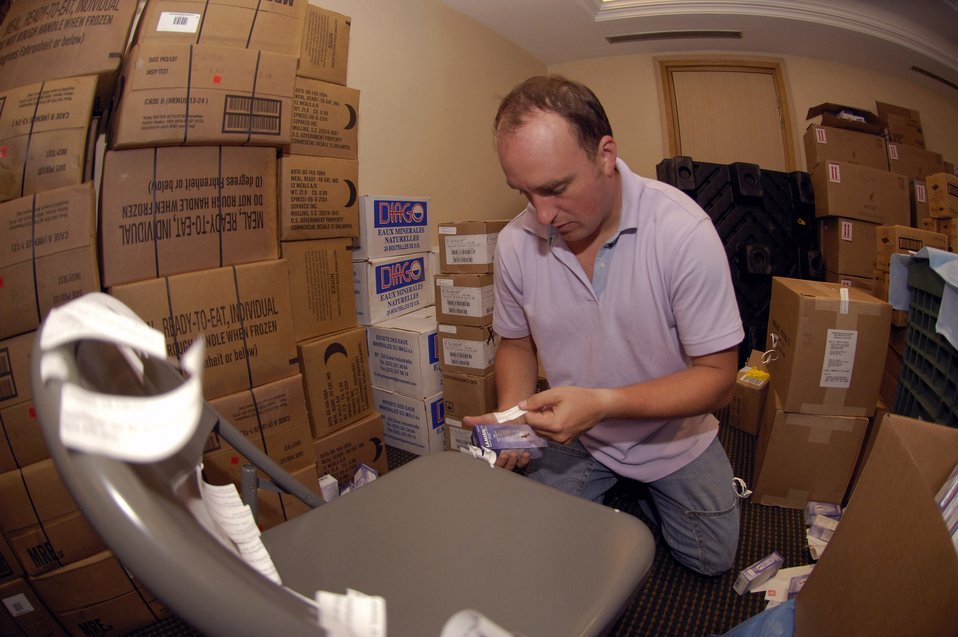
Pharmacist dispenses much-needed medicine for Malians

Maj. Altan Shaffer labels one of more than 40 medicines that will be distributed to thousands of Malians during MEDFLAG 08, July 14. More than 90 servicemembers deployed to Bamako, Mali, for MEDFLAG 08, a multinational medical training exercise designed to enhance medical capabilities and readiness for U.S. and African Forces. Major Shaffer is deployed from the 31st Medical Group, Aviano Air Base, Italy.